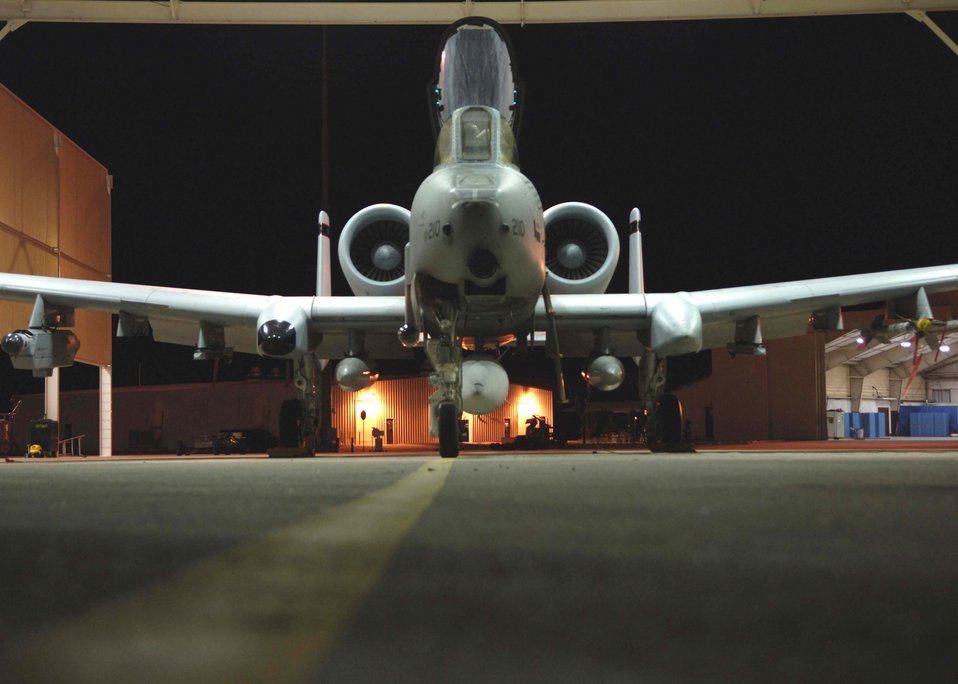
Bushwacker 06-04

Capt. Joseph Hext of the 354th Fighter Squadron performs a pre-flight check on his A-10 Thunderbolt II Sept. 16 during Bushwacker 06-04, an exercise at Davis-Monthan Air Force Base, Ariz.